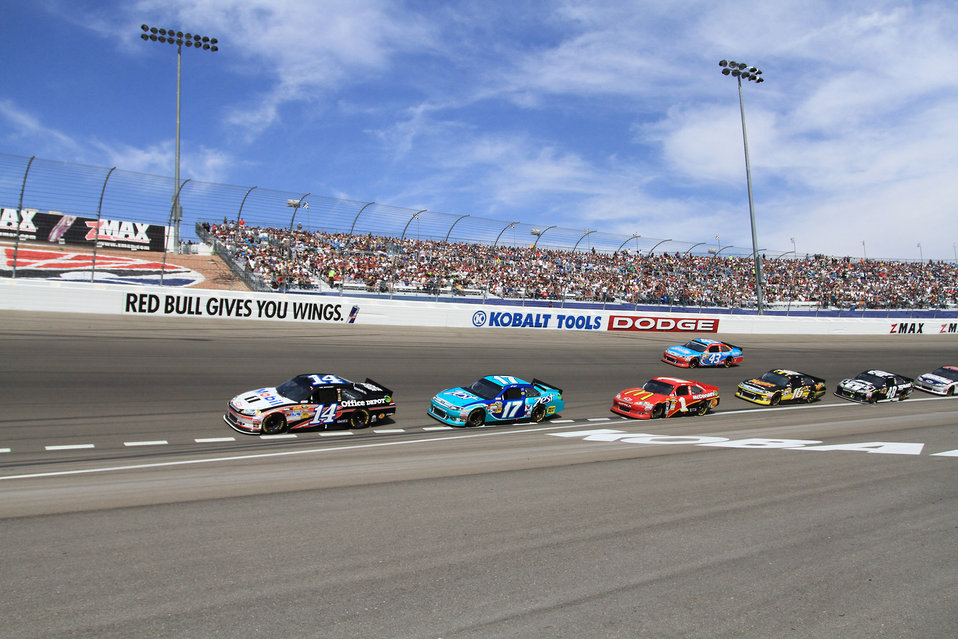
Race day

Nascar las vegas motor speedway 2012.